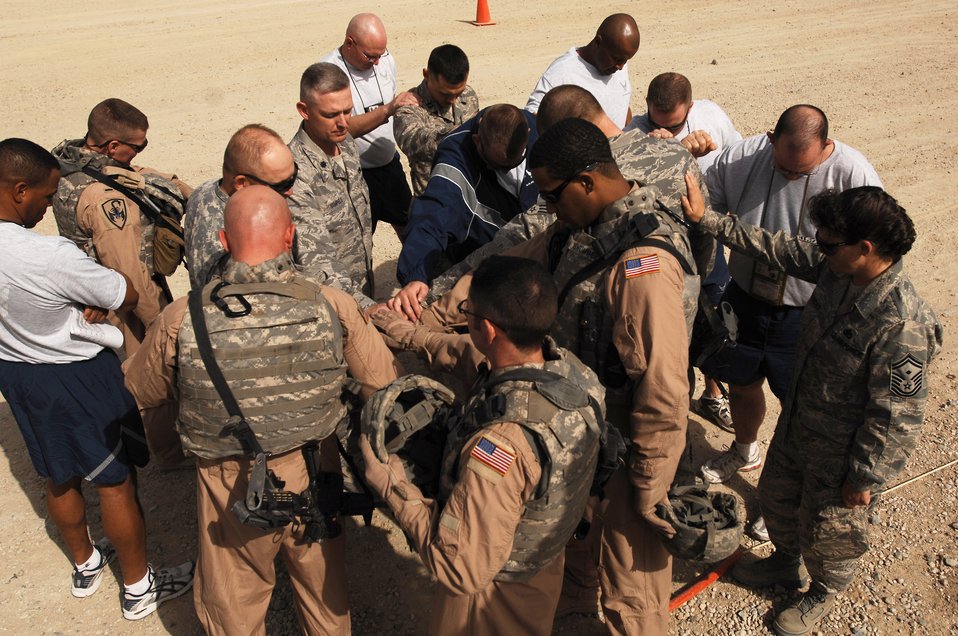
Combat truckers haul cargo through dangerous roads

Airmen from the 586th Expeditionary Logistics Readiness Squadron, 70th Medium Truck Detachment, bow their heads during a prayer before heading out on a recent convoy from an Army camp in Southwest Asia. The Airmen of the 70th and 424th MTDs assigned to the 586th ELRS are in-lieu-of forces supporting the Army support line-haul convoy movements in and out of Iraq.